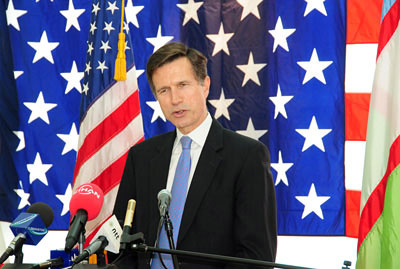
Assistant Secretary Blake Leads a Press Conference

U.S. Assistant Secretary of State for South and Central Asian Affairs Robert O. Blake responds to reporters’ questions during his visit to Tashkent, Uzbekistan, for the second round of its Annual Bilateral Consultations with Uzbekistan on February 18, 2011.